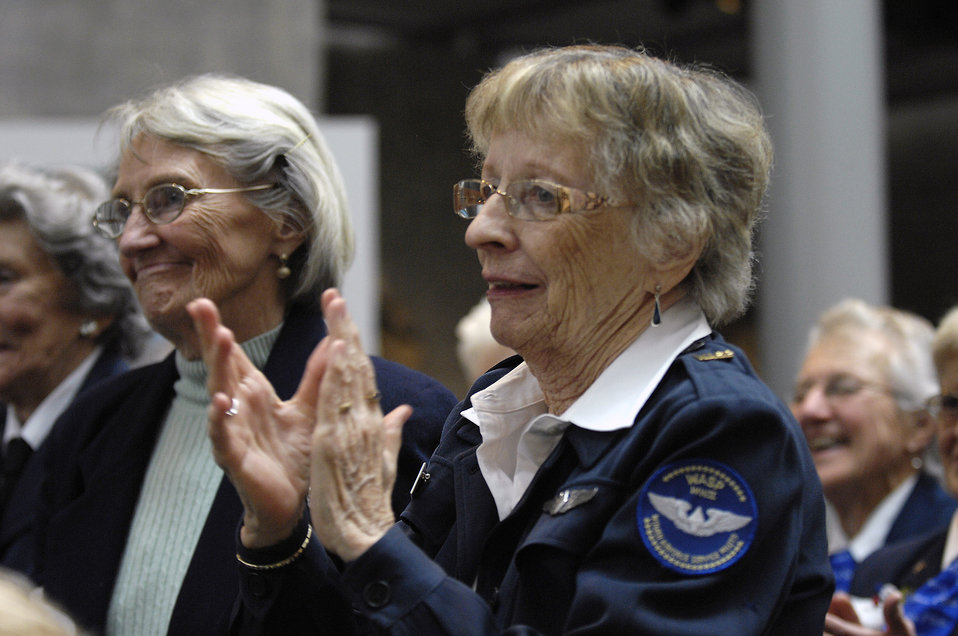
WASP exhibit opens in Arlington

Mary Cox and Kris